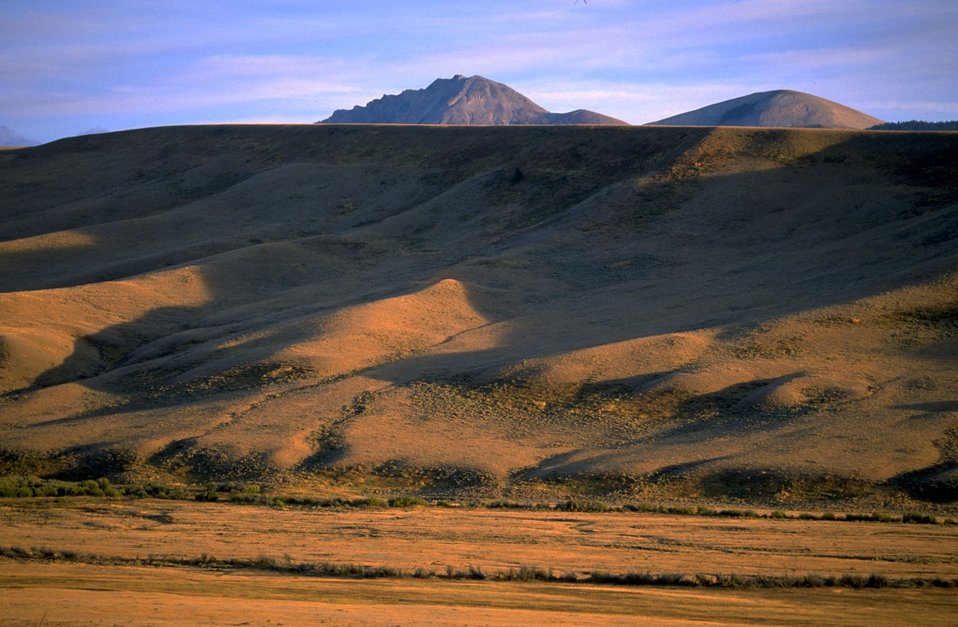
Mountains sticking above a grassy bench in the late afternoon light